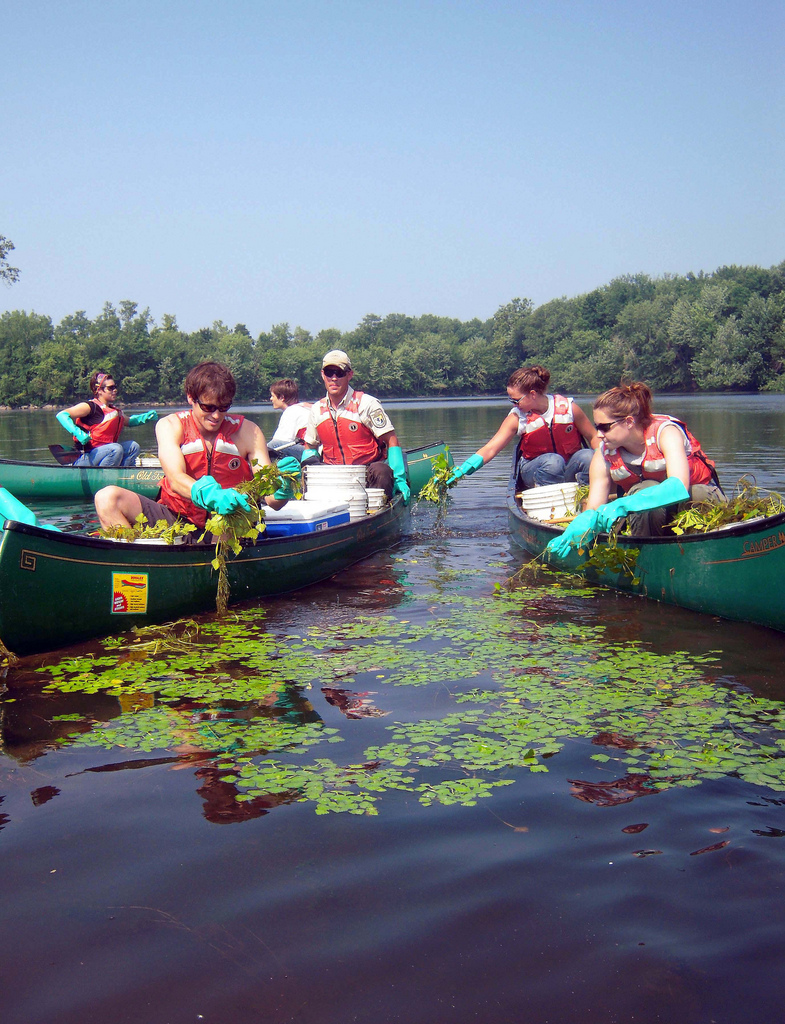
Photo of the Week - Removing Invasive Species (MA)

Photo of the Week - 3/4/13

This week is National Invasive Species Week. Here is a YCC
crew removing invasive water chestnut from Oxbow Lake in Easthampton, Mass.